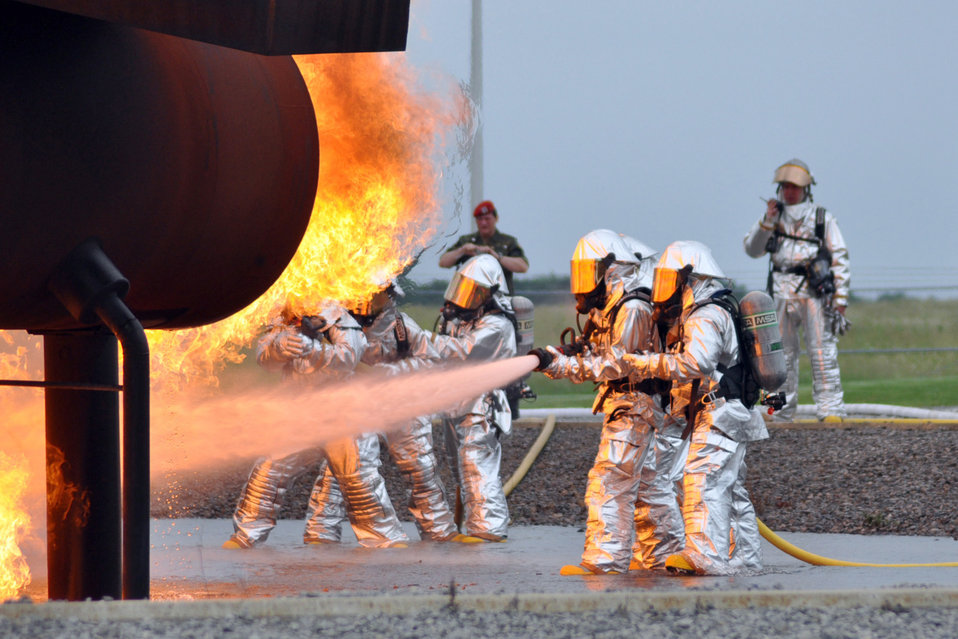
I've got your back

Firefighters conduct a demonstration June 17, 2010, at the Youngstown Air Reserve Station, Ohio, fire pit as German reserve officer Lt. Col. Patrick Hofmann looks on. Colonel Hofmann, with the German Joint Support Service, visited the installation as part of the Defense Department Reserve Officers Exchange Program. The firefighters are with the 910th Civil Engineer Squadron.